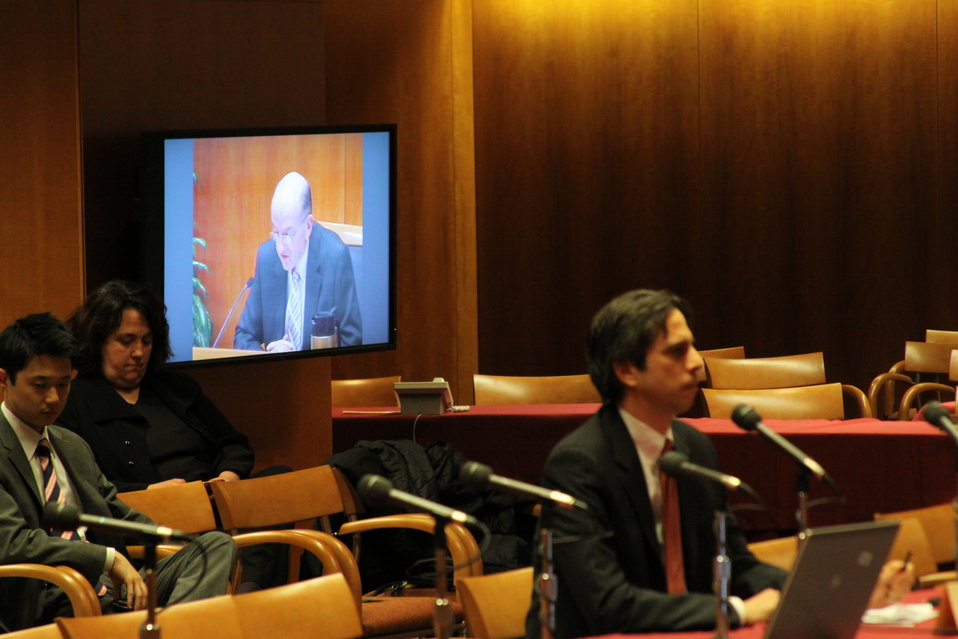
Open Commission Meeting - 2/18/2010

The Federal Communications Commission will hold an Open Meeting in Washington, DC. on February 18, 2010, which will include the following items:

E-Rate: An Order and Notice of Proposed Rulemaking to enable schools that receive funding from the E-Rate program to allow members of the general public to use the schools' Internet access during non-operating hours at no additional cost to the Universal Service Fund. This order and notice do not permit or require any changes to E-Rate applications due on February 11, 2010; Ex Parte Reform: A Notice of Proposed Rulemaking to improve the transparency and effectiveness of the FCC's decision-making process by reforming the ex parte rules; Procedural Reform: A Notice of Proposed Rulemaking to enhance the efficiency, openness, and transparency of the Commission's proceedings by improving and modernizing certain organizational and procedural rules; National Broadband Plan Status Report: Commission staff will report on the status of the National Broadband Plan, providing a framework for the national purposes portion of the Plan.